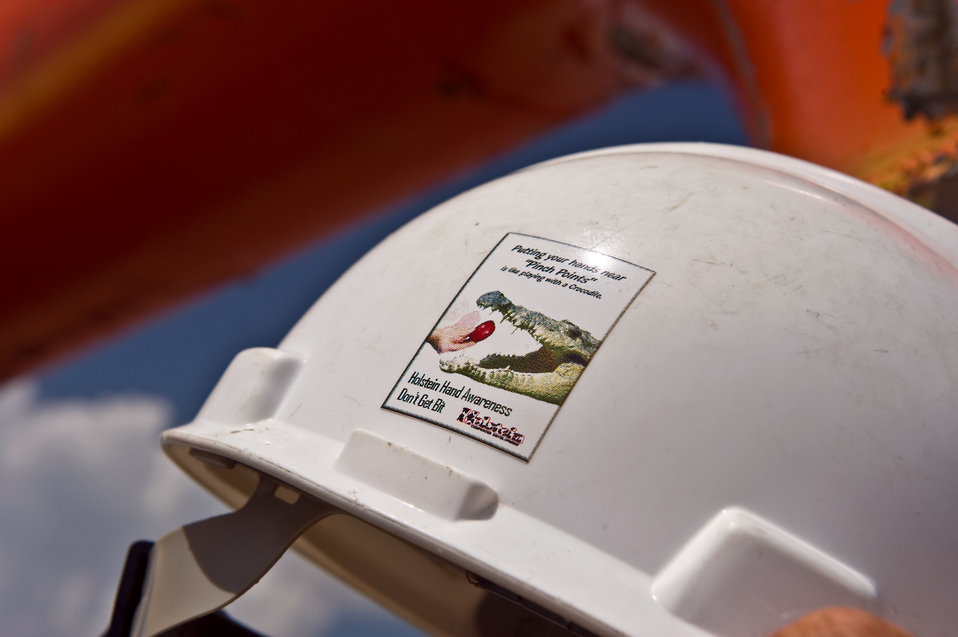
August 7, Attention grabbing safety sticker

Because worker safety has to be taken seriously, creativity often helps make the point.